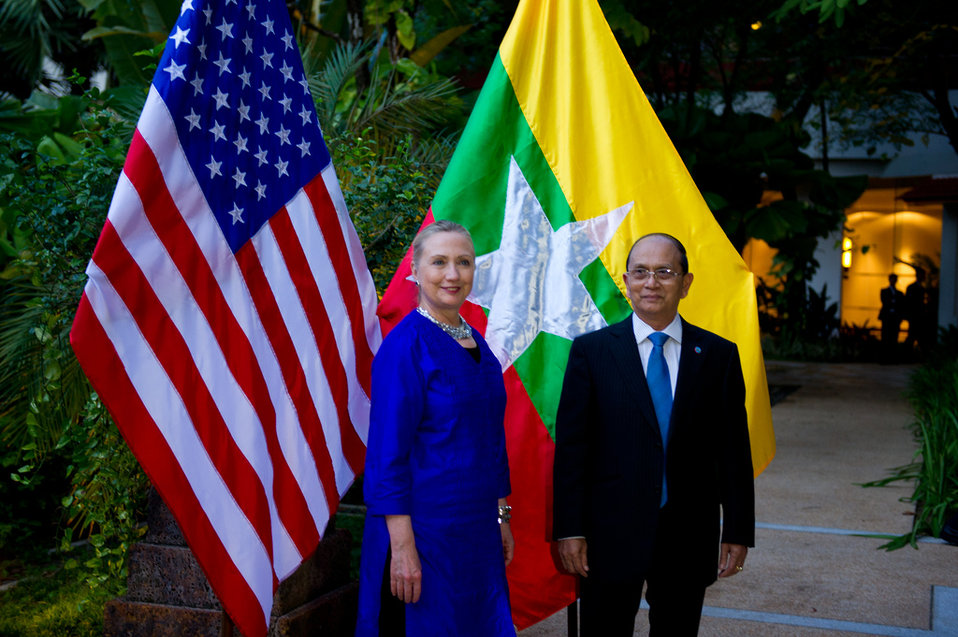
Secretary Clinton and Burmese President Thein Sein Pose for a Photo

U.S. Secretary of State Hillary Rodham Clinton and Burmese President Thein Sein pose for a photo before their bilateral meeting in Siem Reap, Cambodia, on July 13, 2012.